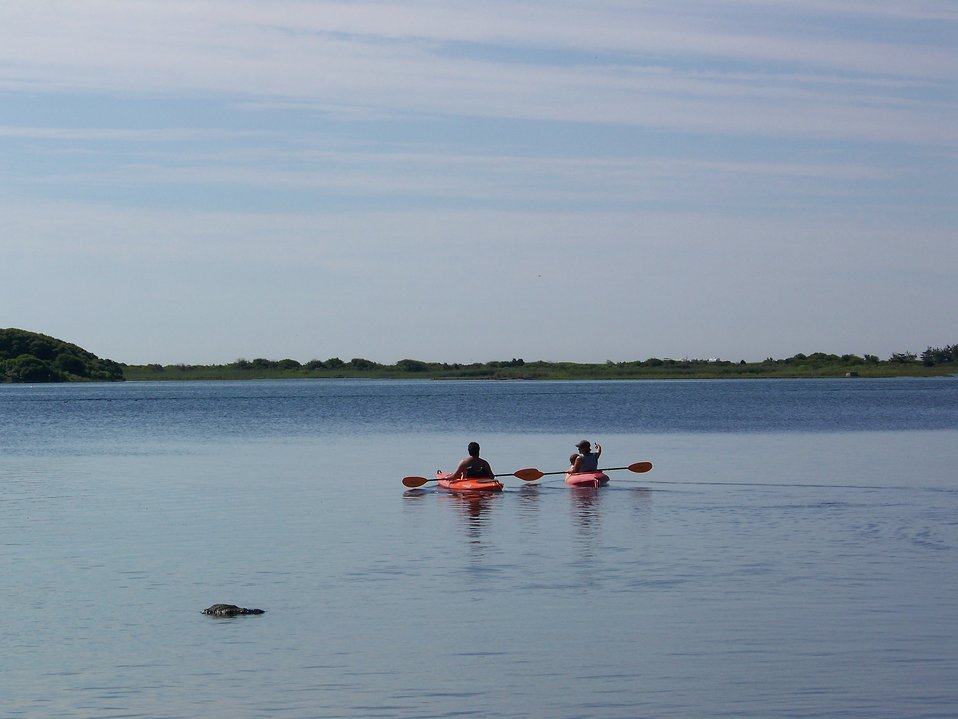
Kayakers

Ninigret National Wildlife Refuge, RI.